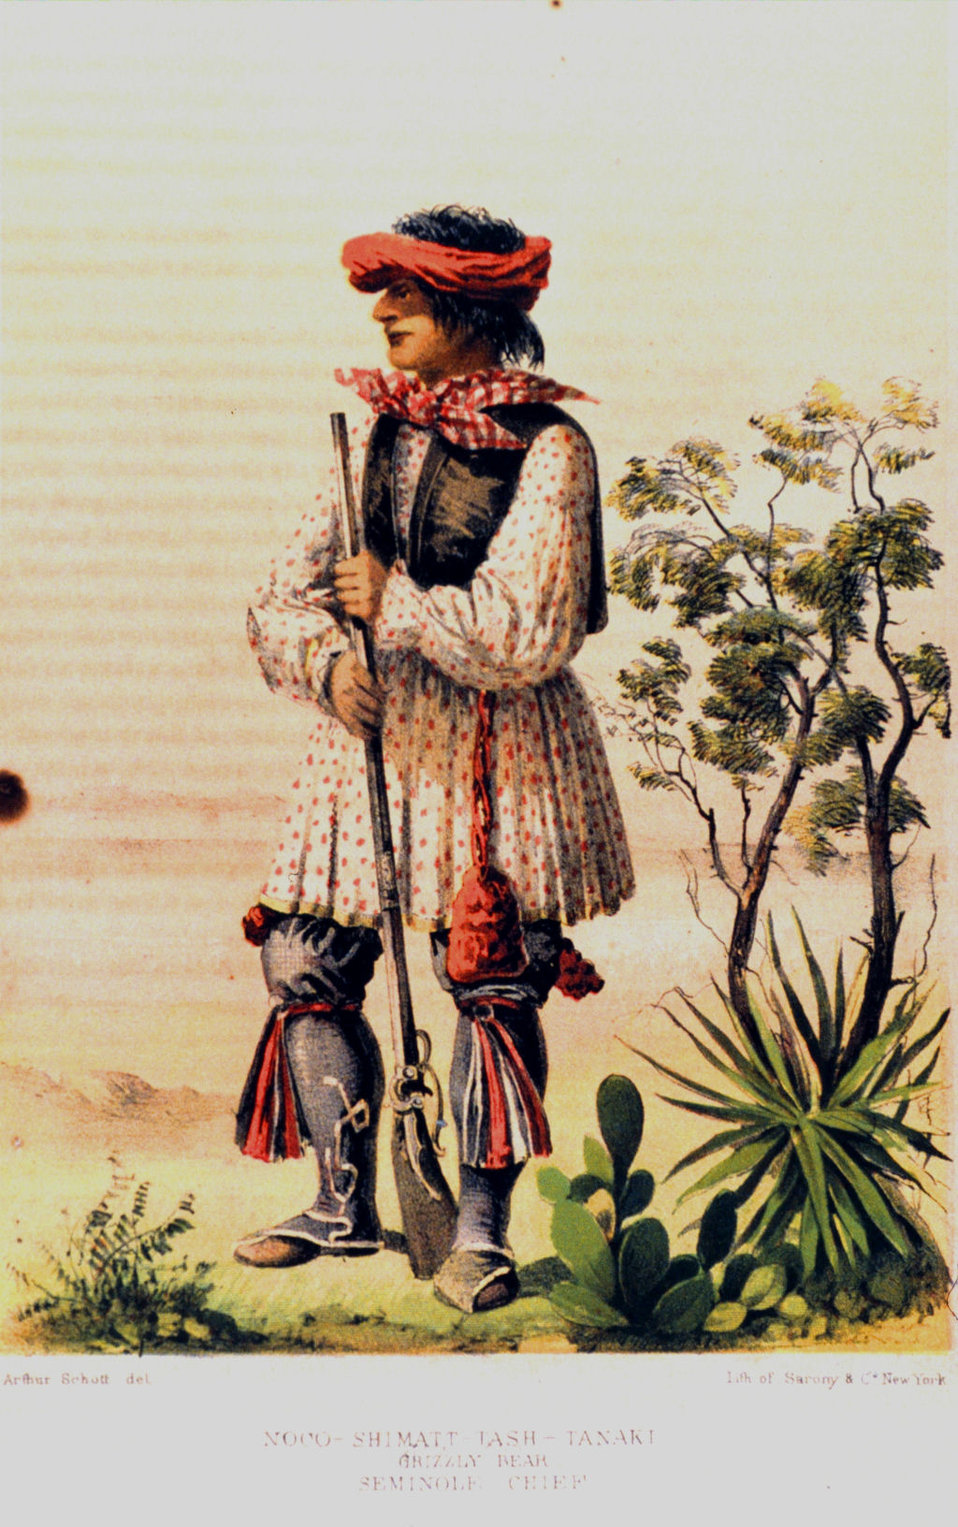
Noco Shimatt-Tash-Tanaki, Grizzly Bear, Seminole Chief. In: 'United States and Mexican Boundary Survey. Report of William H. Emory ....' Washington. 1857. Volume I. P. 52. Library Call Number F786 .U45 1857.